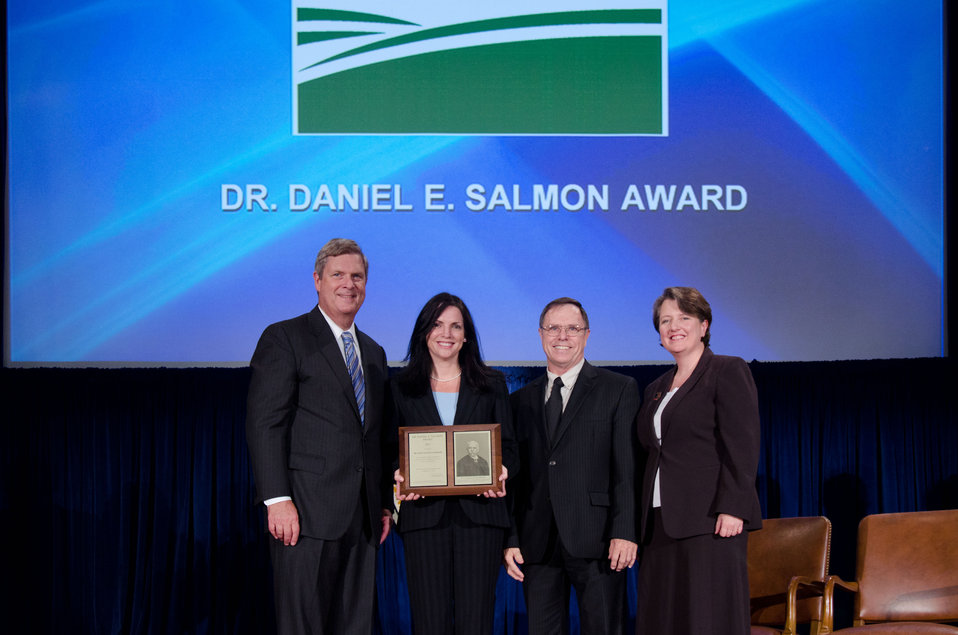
Agriculture Secretary Tom Vilsack (l) and Deputy Secretary Kathleen Merrigan (r), presents the Dr. Daniel E. Salmon Award to Dr. Mary Pantin-Jackwood. For outstanding contributions and notable service in the public’s interest by a federally employed veterinarian who has no more than 10 years of service. On Wednesday, September 14, 2011 in the Jefferson Auditorium at the US Department of Agriculture in Washington, DC.